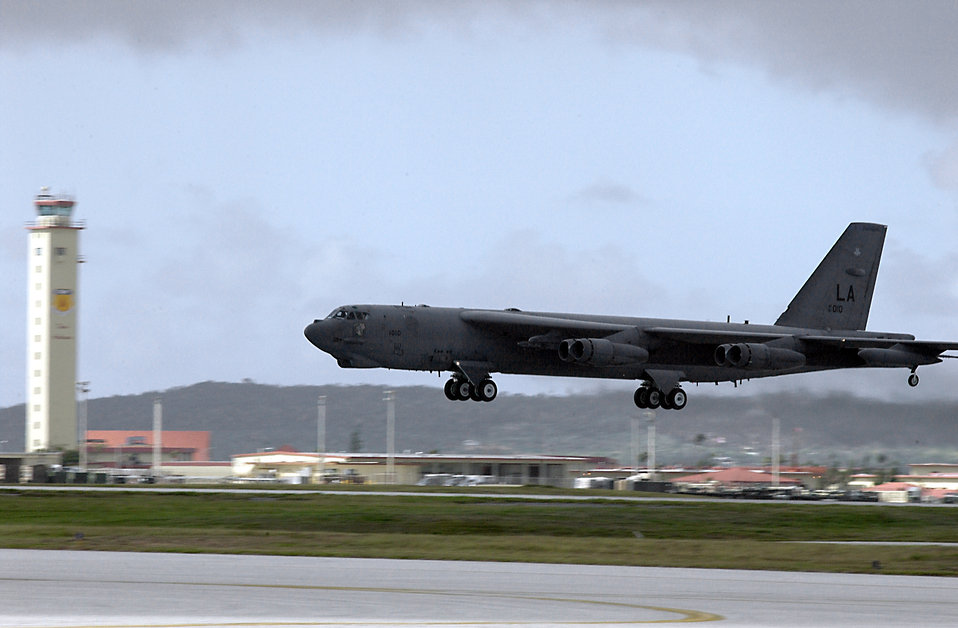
Buff lift off

ANDERSON AIR FORCE BASE, Guam -- A B-52 Stratofortress deployed from Barksdale Air Force Base, La. lands here April 2, 2003. Aircraft and personnel are deplyed here in support of the 7th Air Expeditionary Wing's mission.